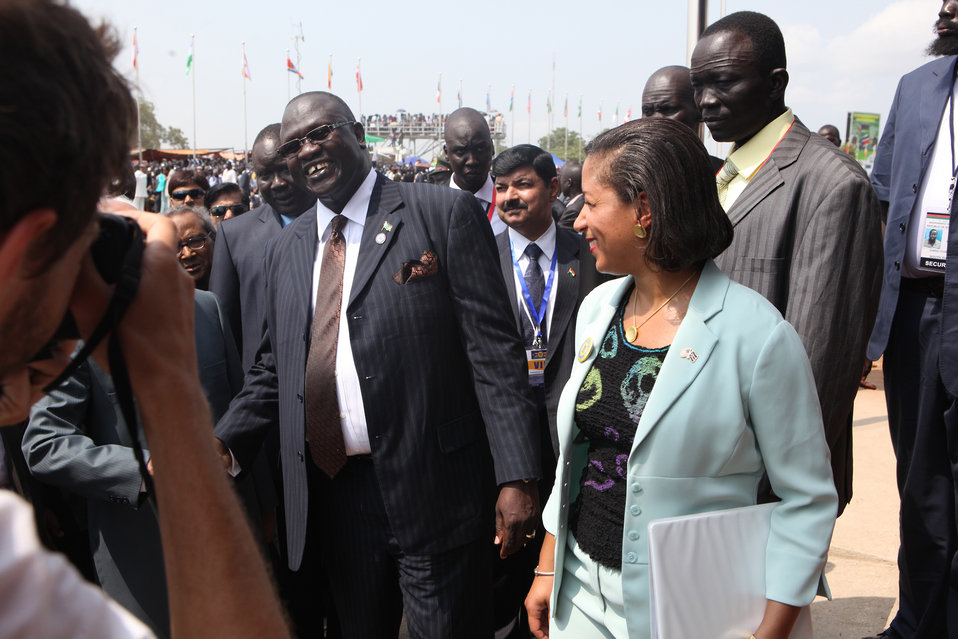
South Sudan Independence Day

Ambassador Susan E. Rice, U.S. Permanent Representative to the United Nations, greets Vice President Dr. Riek Machar at the Republic of South Sudan Independence Day celebrations in Juba, South Sudan on July 9, 2011.